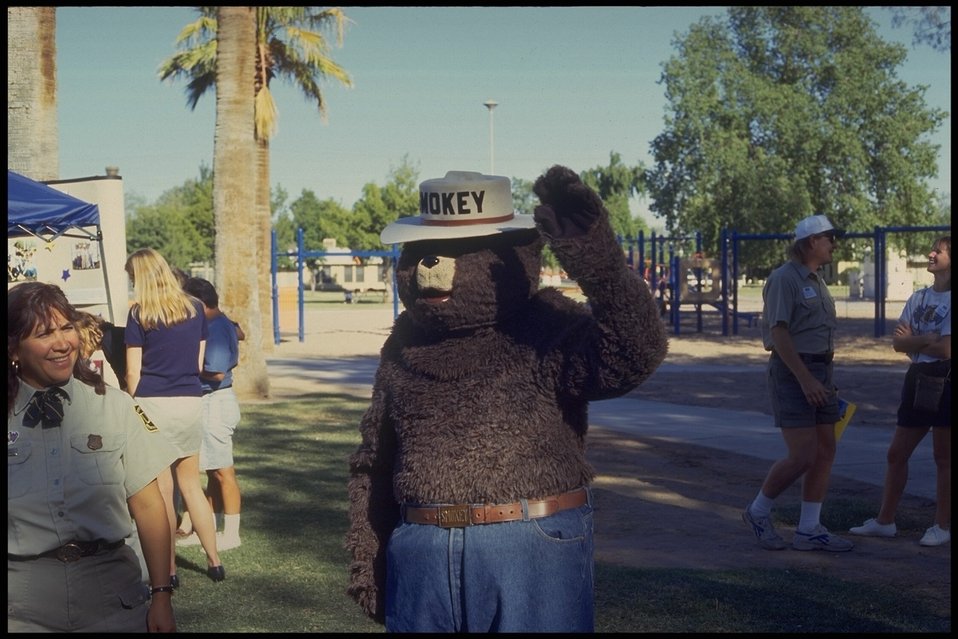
Smokey the Bear pays a visit to WOW (Wonderful Outdoor World), a program that brings traditional outdoor activities to urban youth.